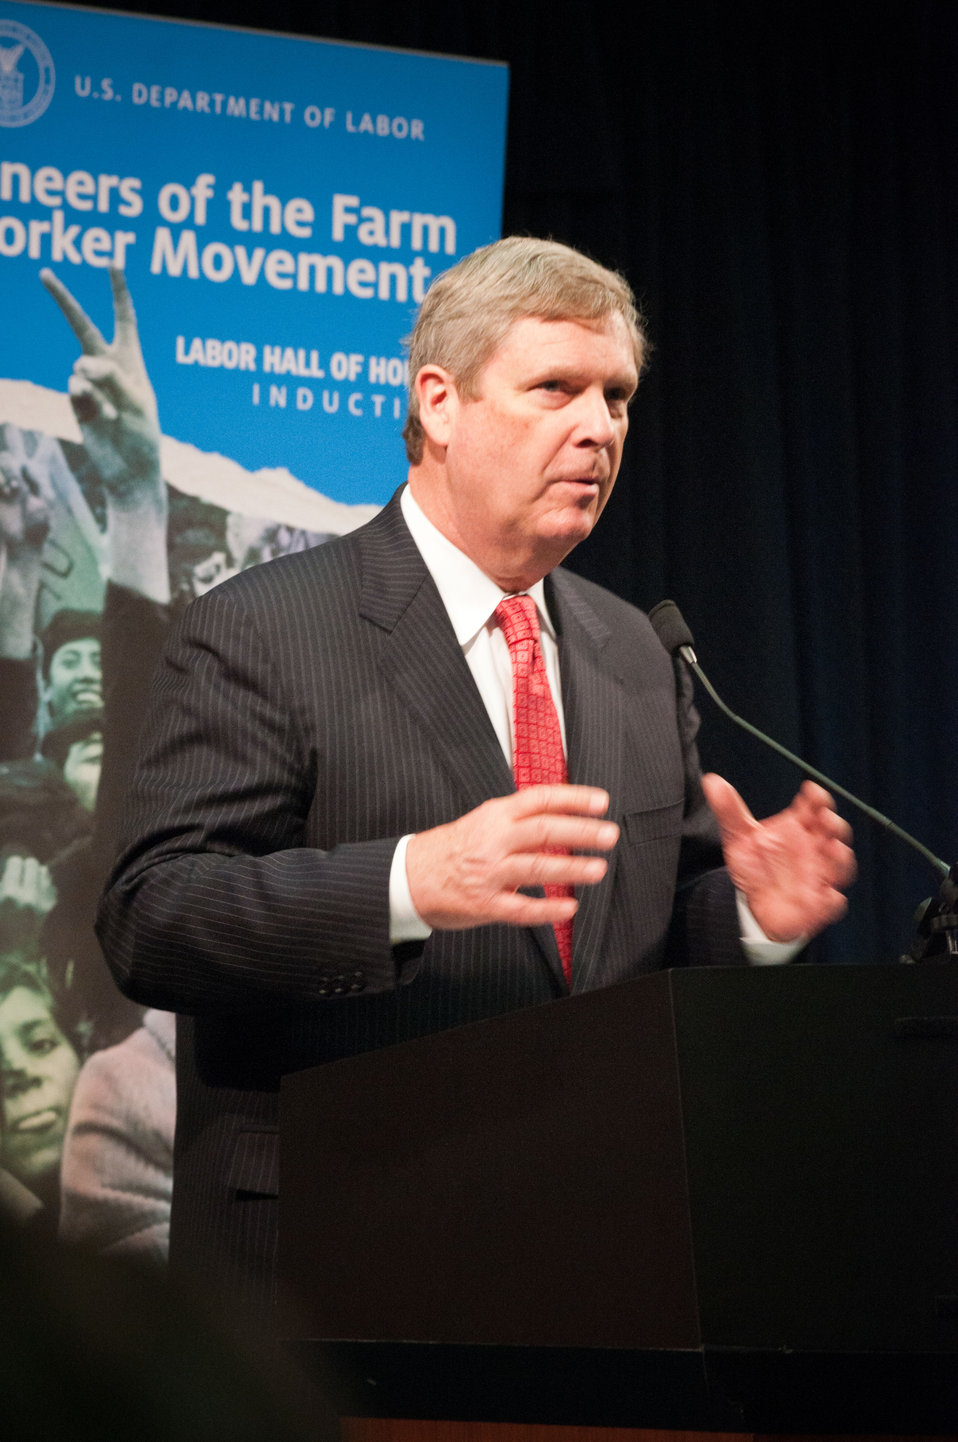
Agriculture Secretary Tom Vilsack spoke of the hard work and sacrifices farm laborers have made for American agriculture during the dedication of the Cesar E. Chavez Memorial Auditorium at the United States Department of Labor in Washington, D.C., Monday, March 26, 2012. Chavez was a Mexican-American labor leader who used non-violent methods to fight for the rights of migrant farm workers in the southwestern United States. Chavez founded the Cesar Chavez Foundation, a group that advocates for the rights of farm workers, acting to increase wages and improve the working conditions and safety of farm workers.